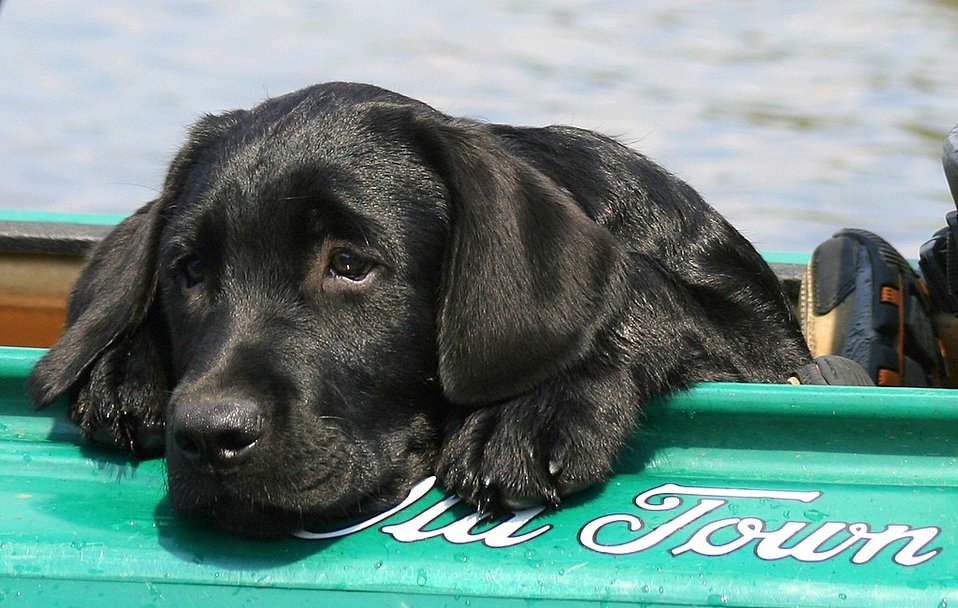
Uploaded by request of John M. Pratt

Brady’s Lake, Pocono, Pennsylvania

My 4 month old Labrador Retriever pup, Baxter riding in my Kayak on Brady’s Lake in the Pocono Mountains PA